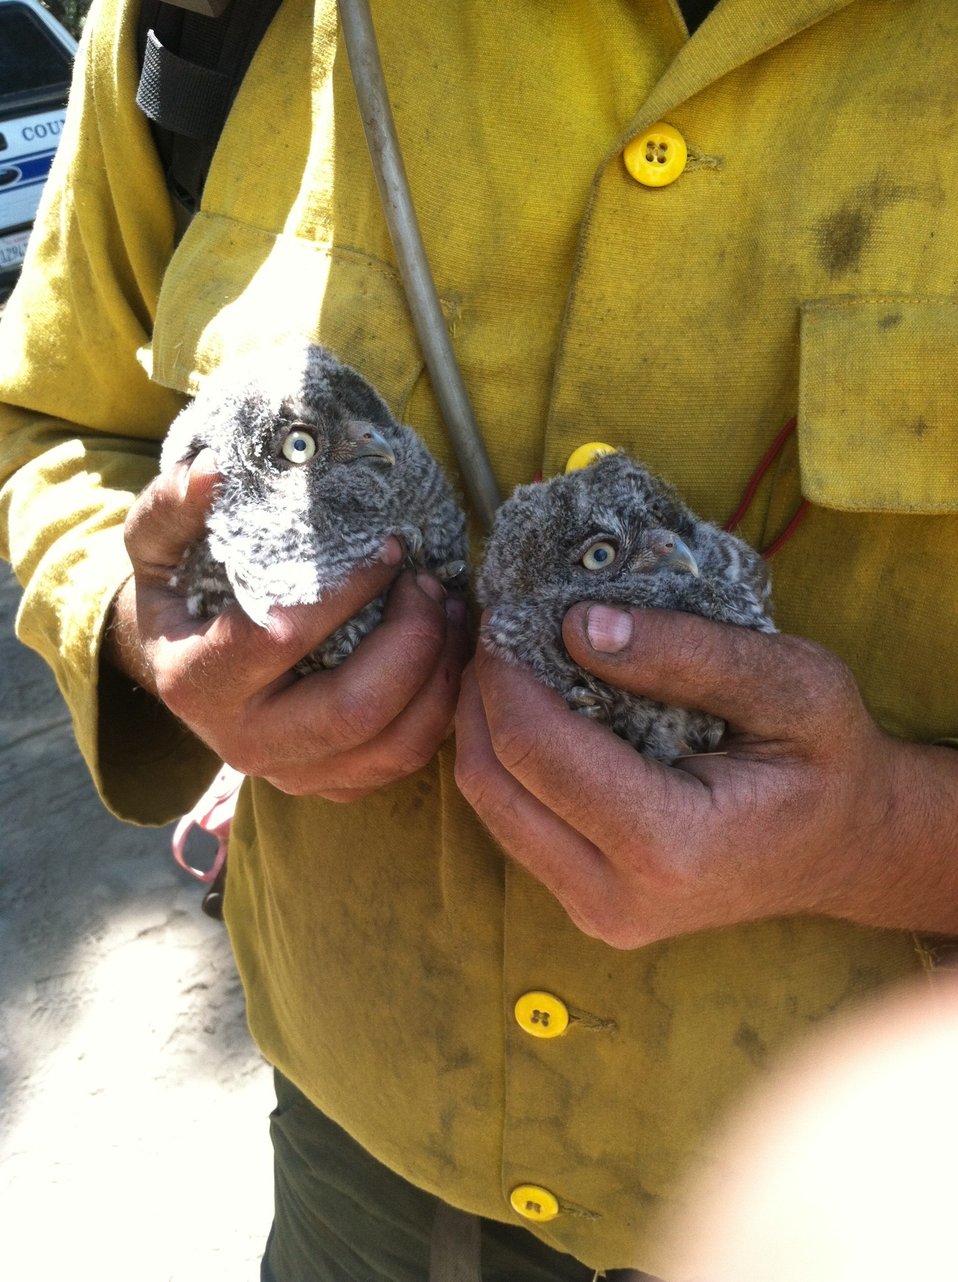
Baby Owls

Stanislaus National Forest Engine 12 firefighter Nick Gauthier holds two baby owls that fell out of a tree during the Carstens Fire on the Sierra National Forest.